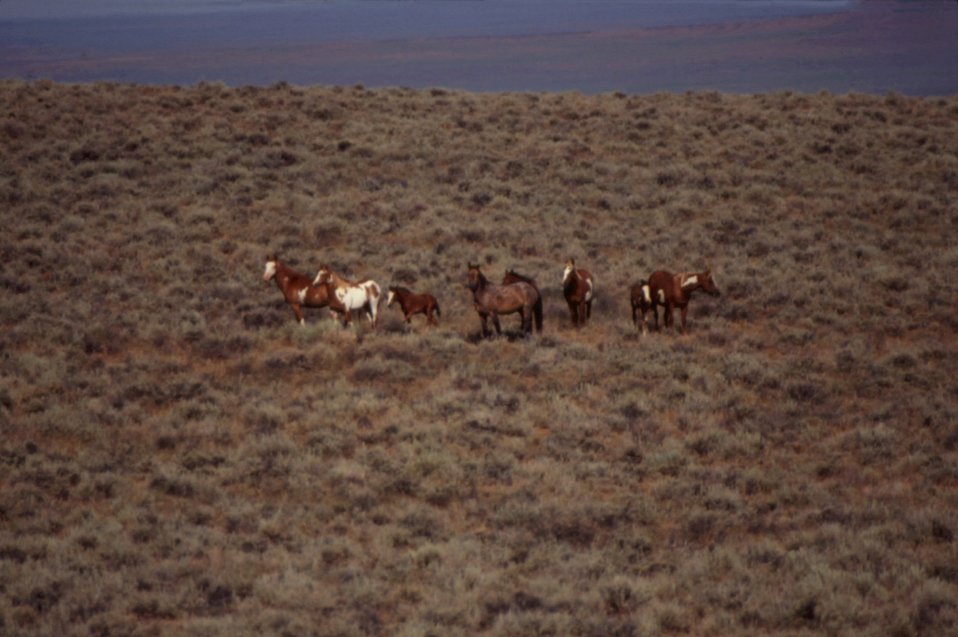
South Steens Wild Horse Management Heard Area.